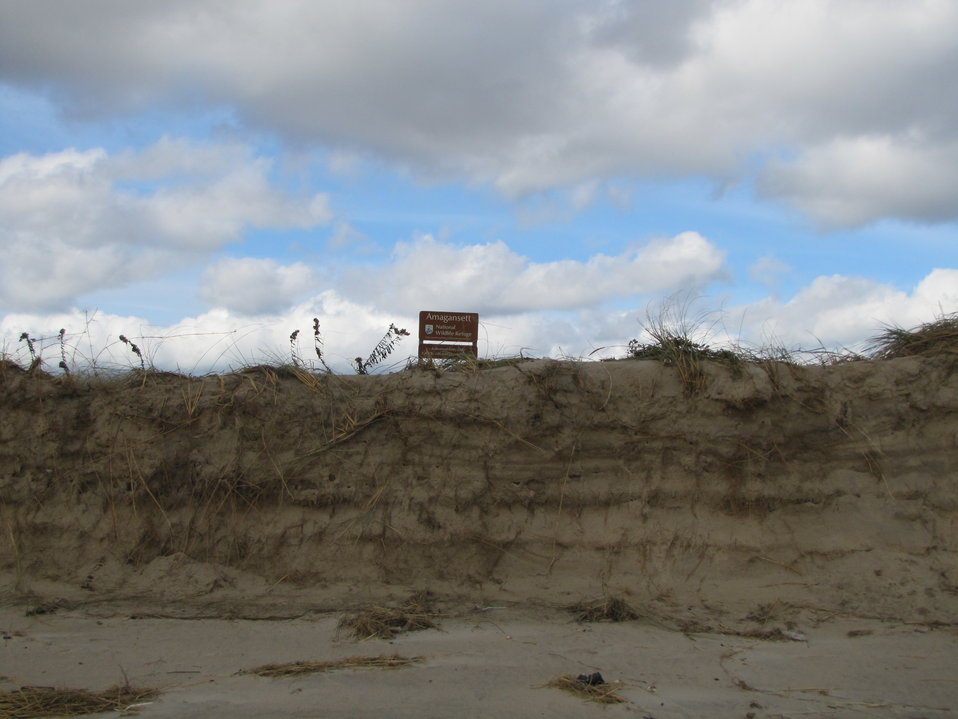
Dune damage at Amagansett National Wildlife Refuge (NY)

A unique double dune system, Amagansett National Wildlife Refuge's primary dune was heavily impacted by the storm.